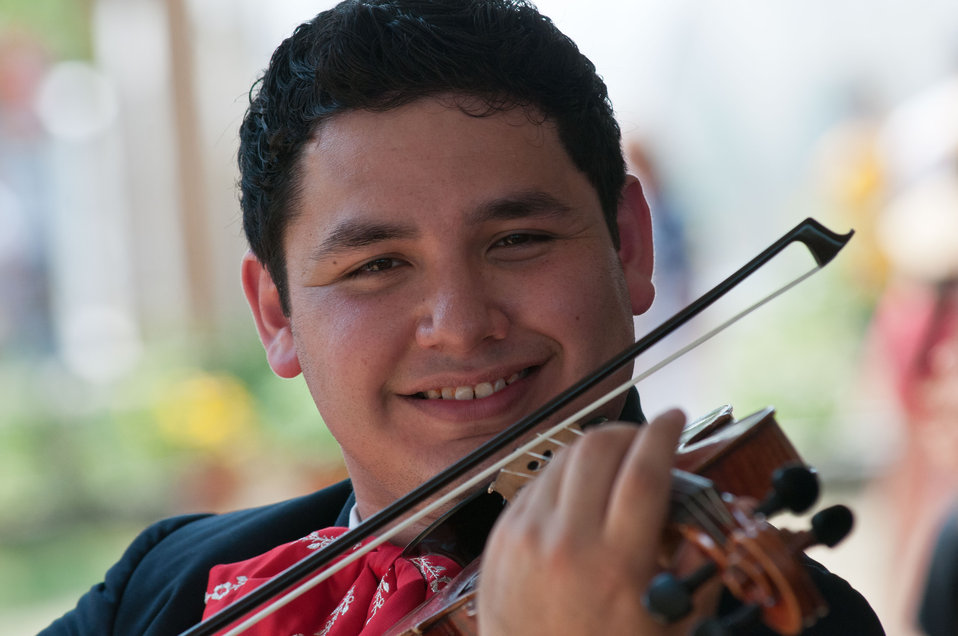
Mariachi Orlando De Leon plays the violin during the 2012 Smithsonian Folklife Festival for the University of Texas - Pan American tent, sharing the Mexican Pan American musical traditions, on the National Mall in Washington, D.C., on Wednesday, June 27, 2012 One of the three themes this year is “Campus and Community.” It celebrates the 150 years of the USDA and the Land-Grant University System. The U.S. Department of Agriculture (USDA) and the Land-Grant system extend education across the country, contributing to American agriculture success and rural prosperity. “Campus and Community” has demonstrations, discussions, hands-on activities, and entertainment to that showcase the many ways that this partnership works to improve American agriculture and rural life.